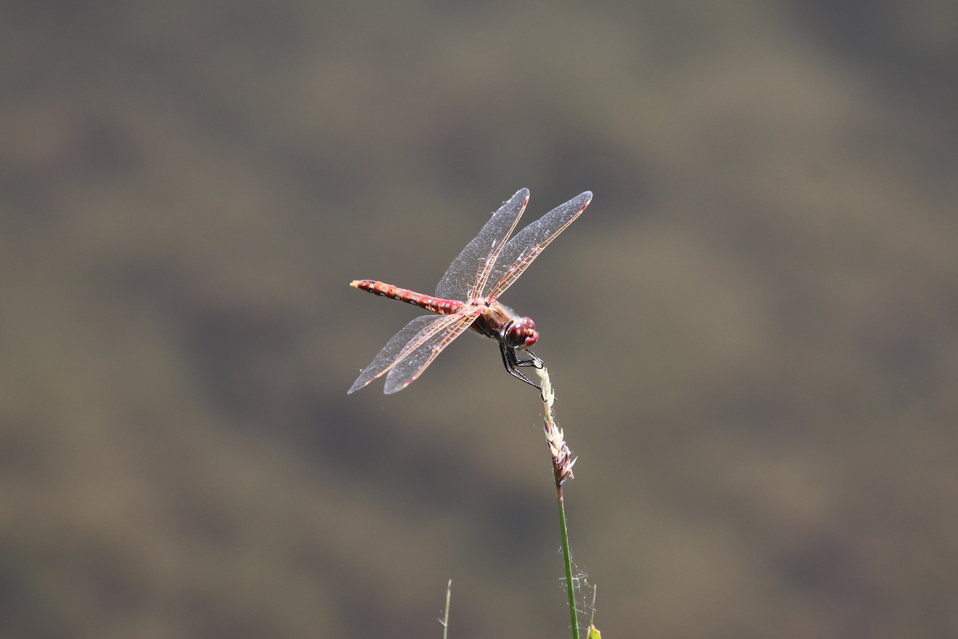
Variegated Meadowhawk

Sympetrum corruptum one of the first Meadowhawk species detected as season begins.